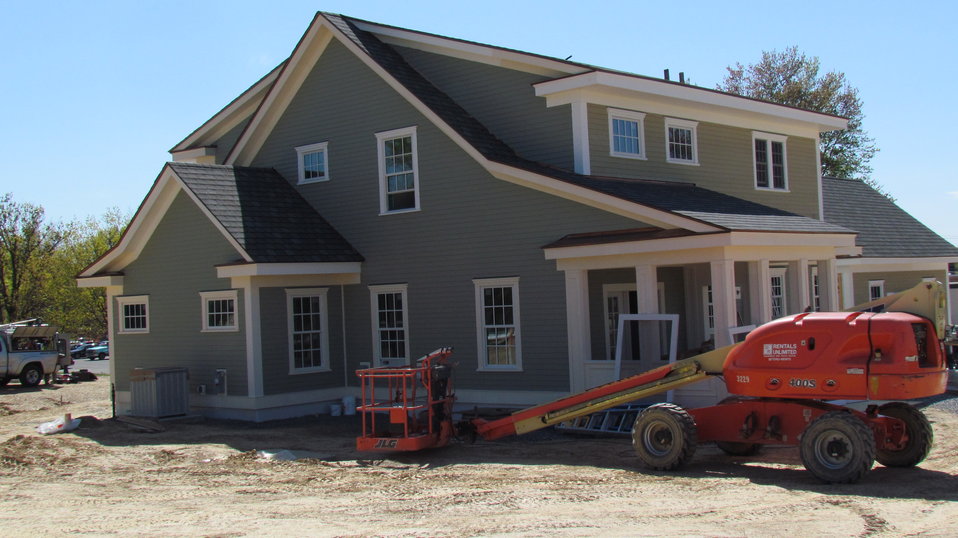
Photograph showing screen assemblies prior to installation in screen porch of NZERTF.